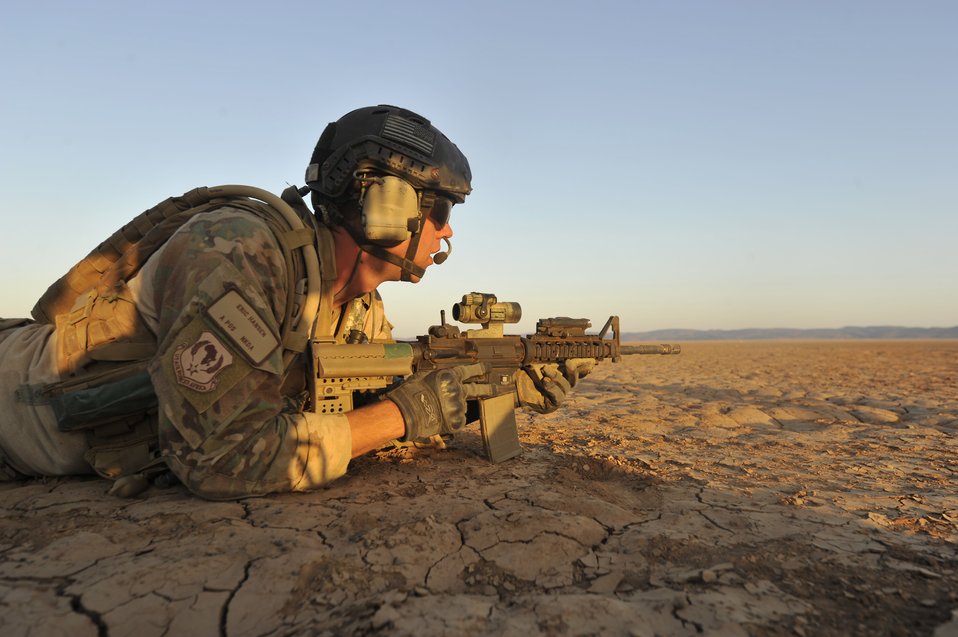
Heroes in training

First Lt. Eric Hansen, an 82nd Expeditionary Rescue Squadron combat rescue officer, provides security during a training scenario in the Grand Bara Desert, Djibouti, Oct. 21, 2011. The 360-degree security allows pararescuemen to concentrate their efforts on providing treatment to casualties and coordinating air evacuation support.